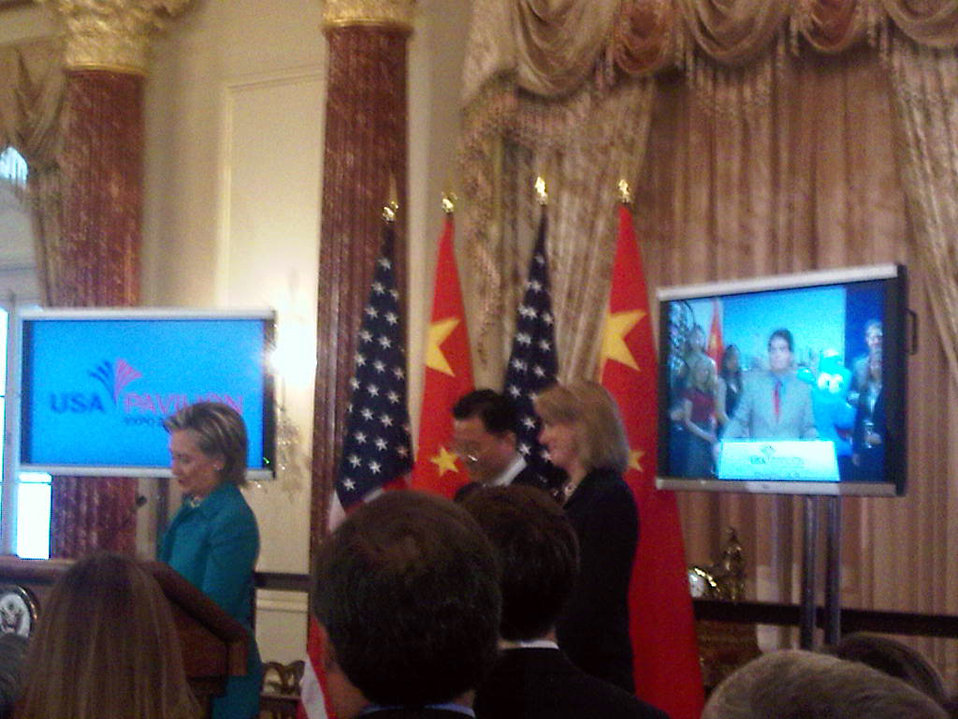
Secretary Clinton Celebrates Opening of Shanghai Expo U.S.A. Pavilion

U.S. Secretary of State Hillary Rodham Clinton celebrates the opening of the U.S.A. Pavilion at the 2010 Shanghai Expo via a digital video conference at a reception hosted by the Office for Global Partnership Initiatives at the Department of State in Washington, DC April 30, 2010.